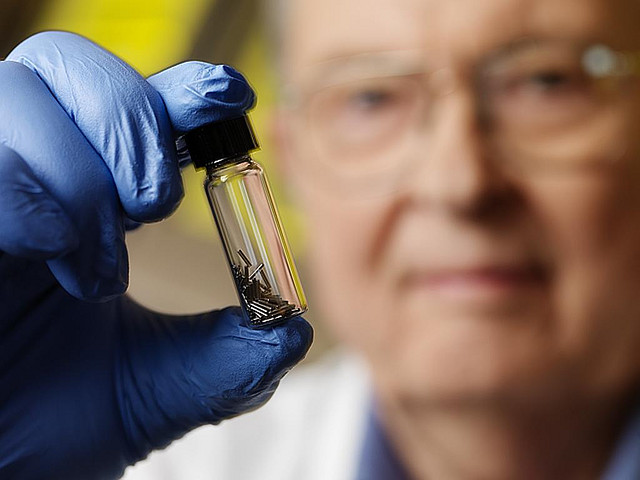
Former Hanford employees formed IsoRay in 2003 to develop life-saving cancer therapies using Cesium-131 isotopes encapsulated within tiny Brachtherapy seeds.
In its founding years, the firm relied on Pacific Northwest National Laboratory for technical assistance from researchers and by using PNNL facilities to perform testing on its early prototypes and processes.